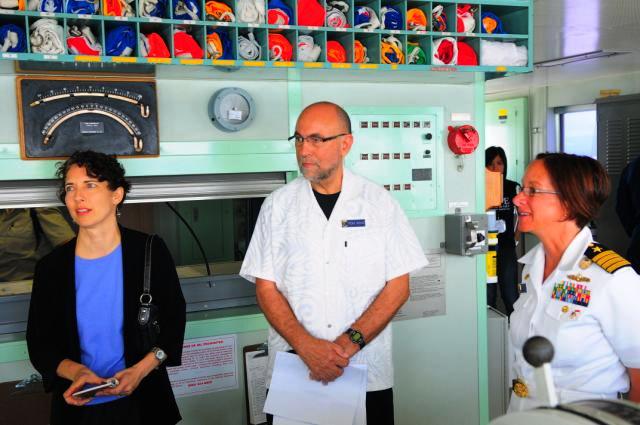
Consul General Bauer, FSO Weinz, and PP 2010 Commander Capt. Franchetti Listen

U.S. Consul General Surabaya Kristen Bauer, U.S. Foreign Service Liaison Officer Tom Weinz, and Pacific Partnership 2010 Commodore Captain Lisa Franchetti listen on the bridge of the USNS MERCY hospital ship in Ternate, Indonesia, on July 18, 2010.